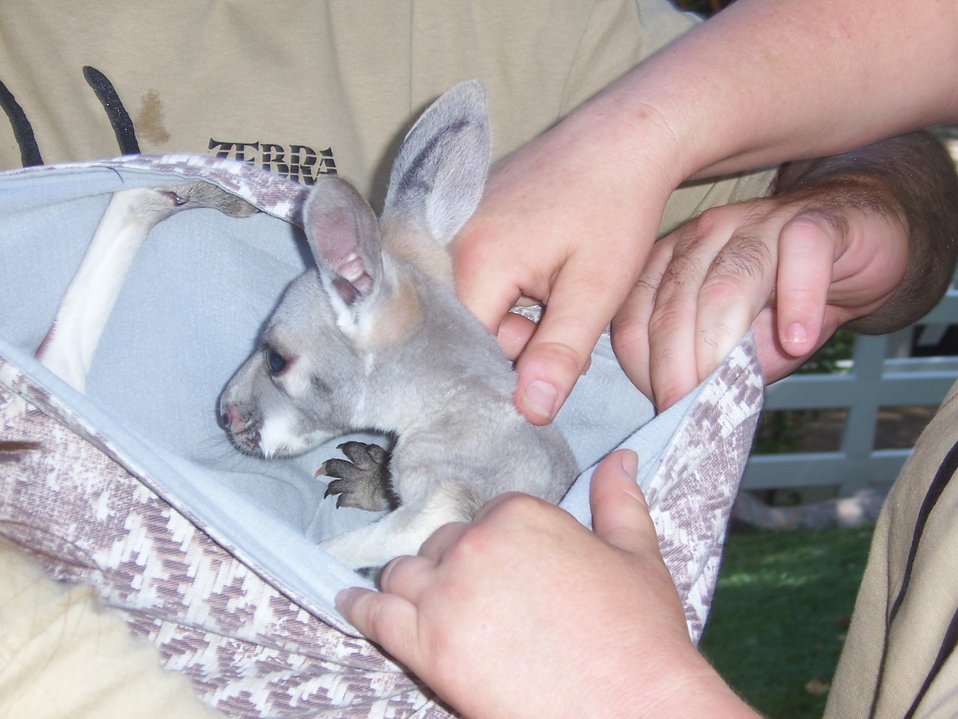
A baby kangaroo